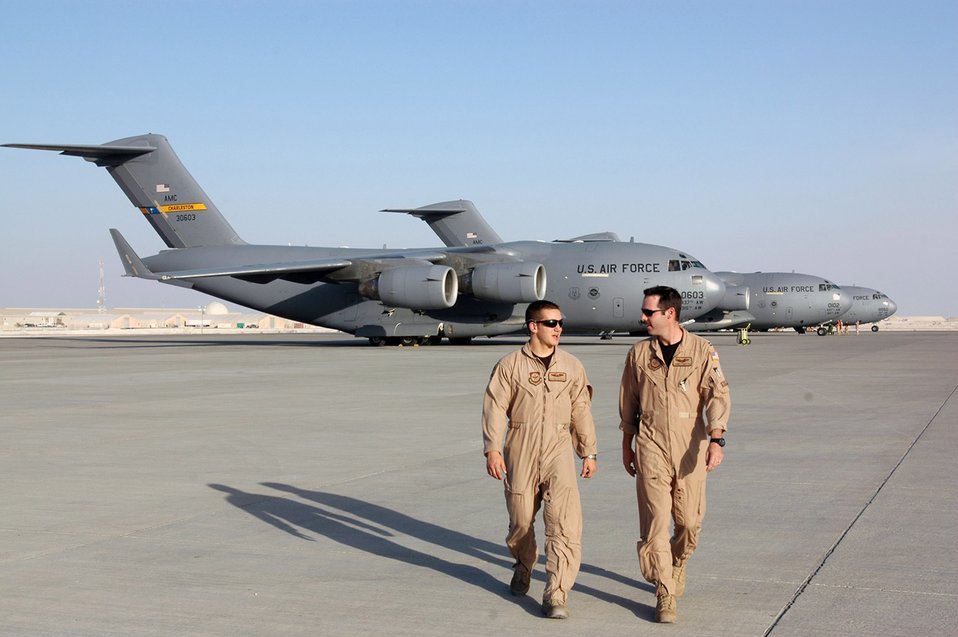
Mobility team answers call for critically injured Soldiers

Senior Airman David Methvan (left) walks with Capt. Corbett Bufton on the flightline in Southwest Asia. Captain Bufton is an 816th Expeditionary Airlift Squadron C-17 aircraft commander and Airman Methvan is an 816th EAS loadmaster. The crew of the C-17 Globemaster III flight to save the injured Soldier in Iraq included Captains Bufton, Scott Frescette and Justin Herbst, Staff Sgt. Matt Nemeth, Airman Methvin and Lt. Col. Jesse Strickland, all based out of Charleston Air Force Base, S.C.